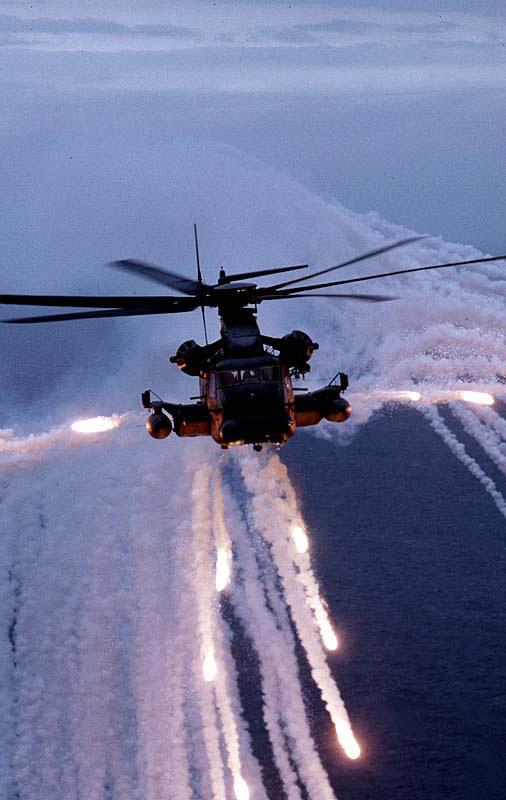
Light show

FILE PHOTO -- The MH-53J's mission is to perform low-level, long-range, undetected penetration into denied areas, day or night, in adverse weather, for infiltration, exfiltration and resupply of special operations forces.